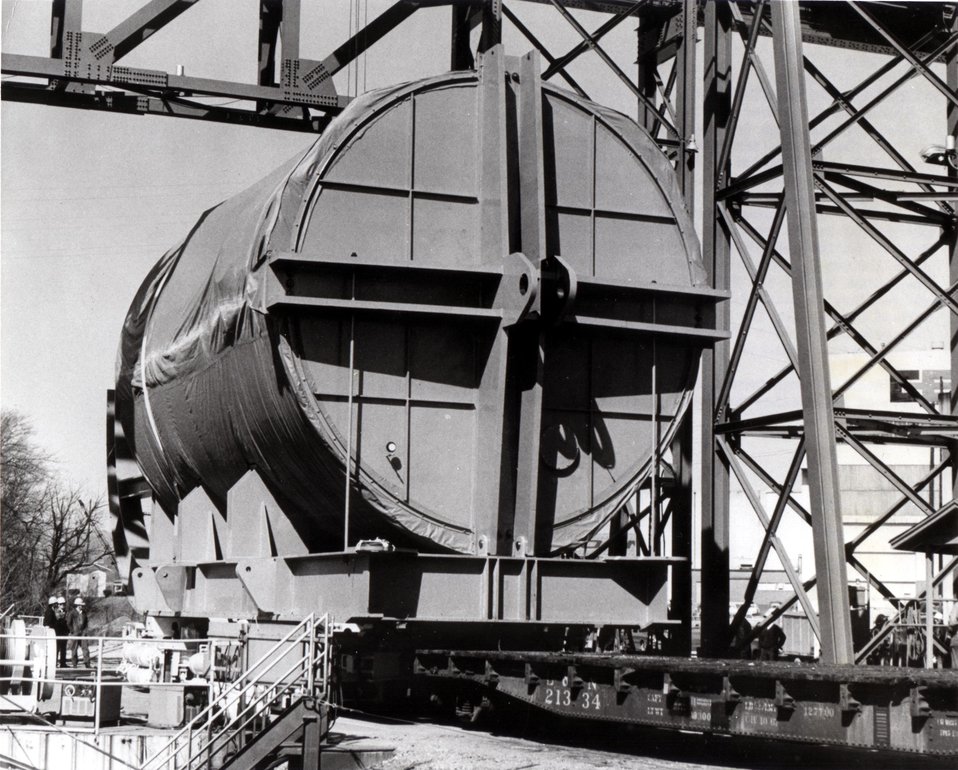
The largest diameter stainless steel nuclear reactor component ever manufactured is shown beginning the 7100-mile journey from Chatanooga, Tennessee to Richland, Washington. Destination is the Fast Flux Test Facility under construction at the Atomic Energy Commission's Hanford site. c. 1973.